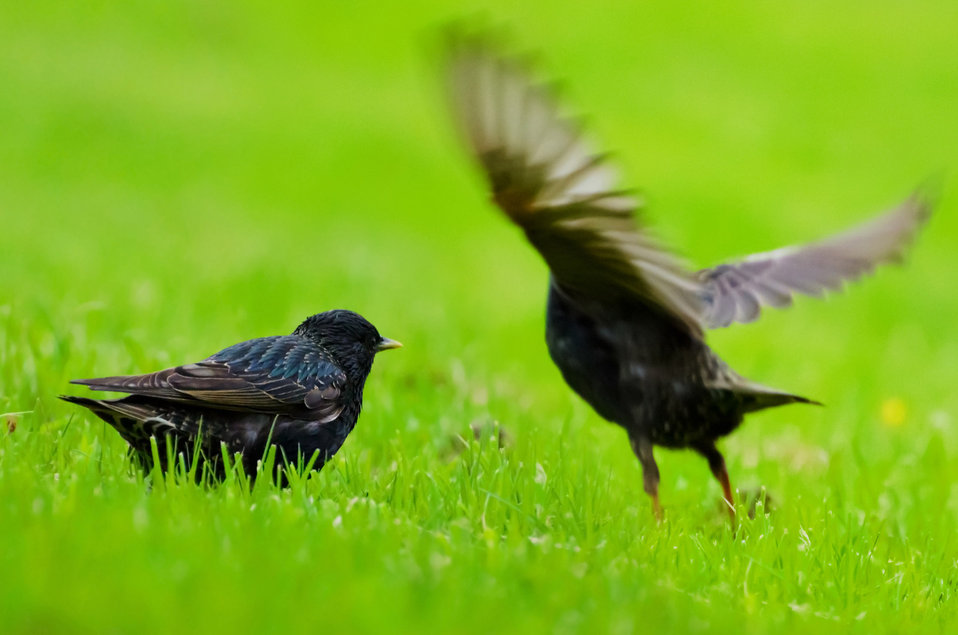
Bird on the meadow.